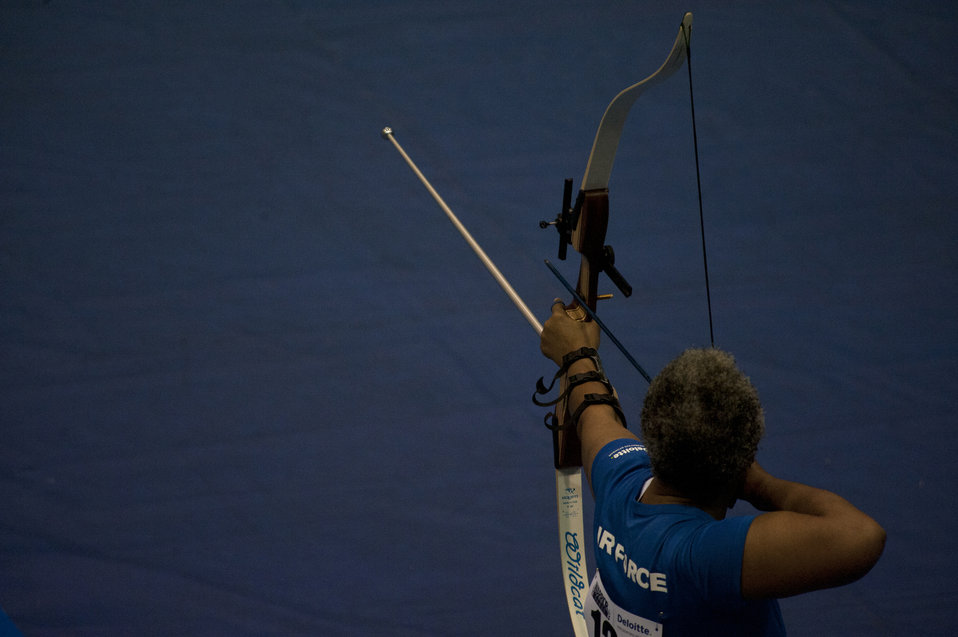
Warrior Games

Gwen Sheppard draws back her bowstring for a shot during the archery competition of the 2012 Warrior Games at the U.S. Air Force Academy in Colorado Springs, Colo., May 2, 2012. Sheppard is with the Air Force team.